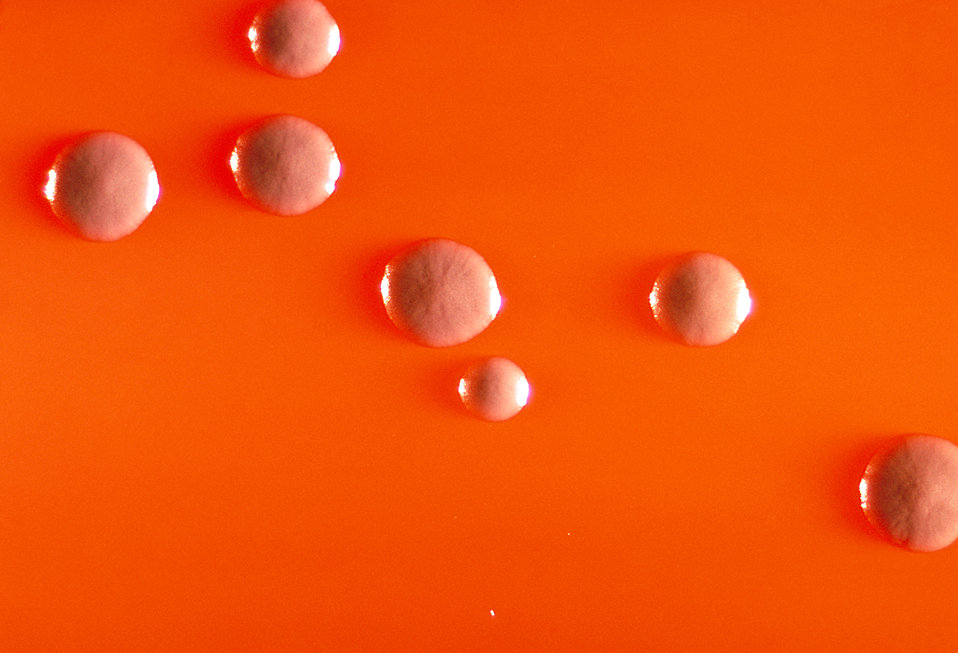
McLeod's agar plate culture of Corynebacterium diphtheriae, gravis biotype.